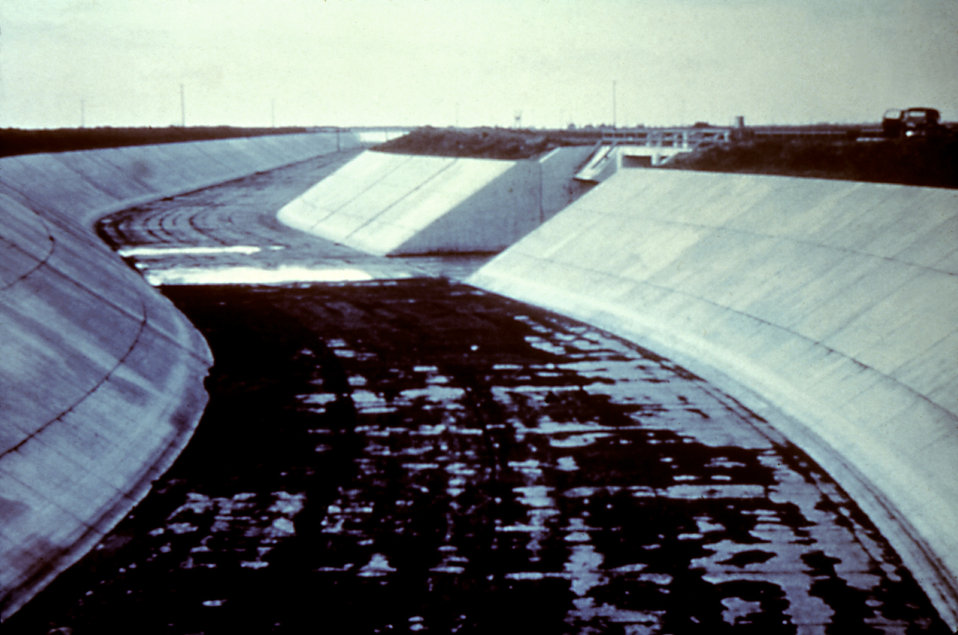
This curved irrigation canal, here empty of water, can act as a breeding ground for mosquitoes when filled during rainy seasons.